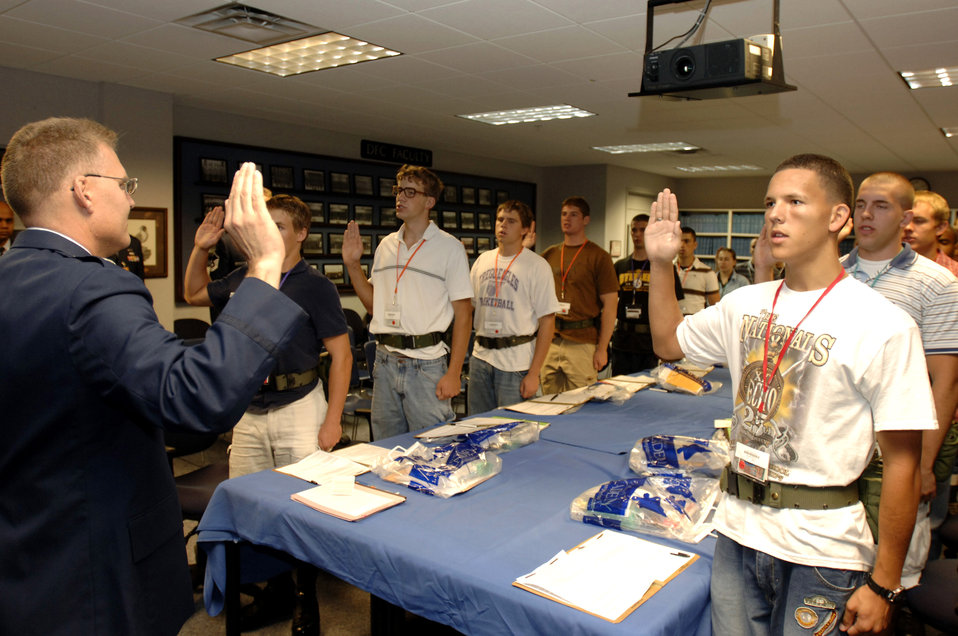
Welcome to the Air Force

Lt. Col. Alan Gladfelter administers the Oath of Allegiance to basic cadet trainees during inprocessing of the Class of 2011 June 28 at the U.S. Air Force Academy in Colorado. The 1,304 members arrived June 28 to begin basic cadet training.